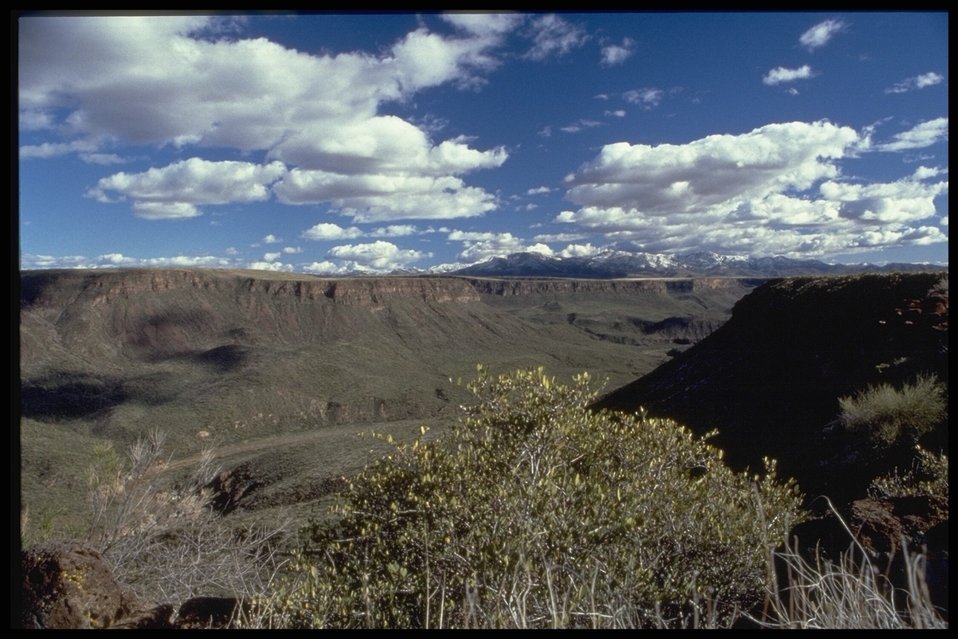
The Agua Fria Canyon below a cloud peppered Arizona sky.